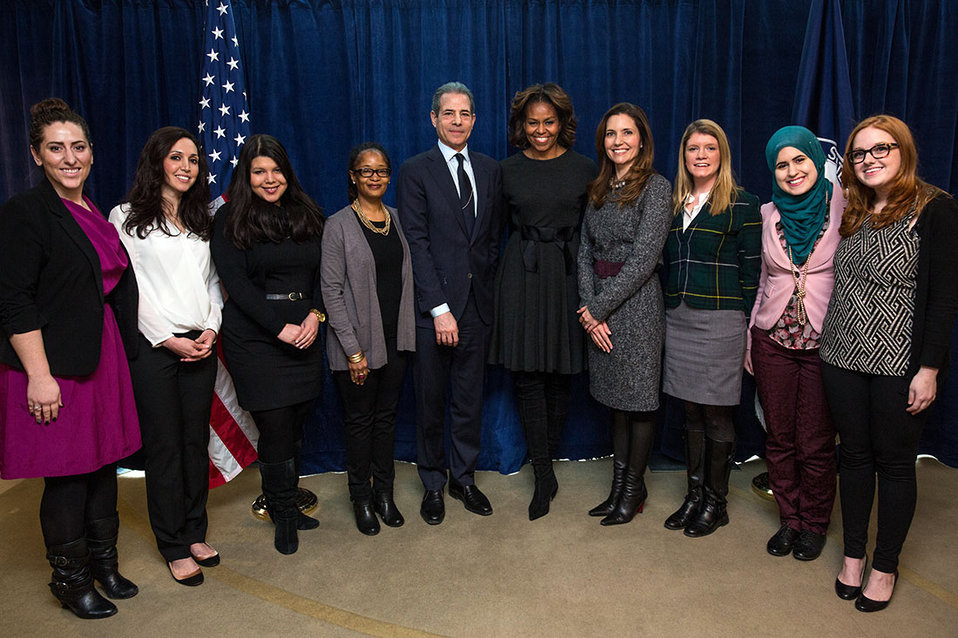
First Lady Michelle Obama and Under Secretary Stengel With IWOC 'Tweet Up' Participants

First Lady Michelle Obama and Under Secretary for Public Diplomacy and Public Affairs Rick Stengel pose for a photo with 'Tweet Up' participants prior to the International Women of Courage Awards at the U.S. Department of State in Washington, D.C., March 4, 2014.